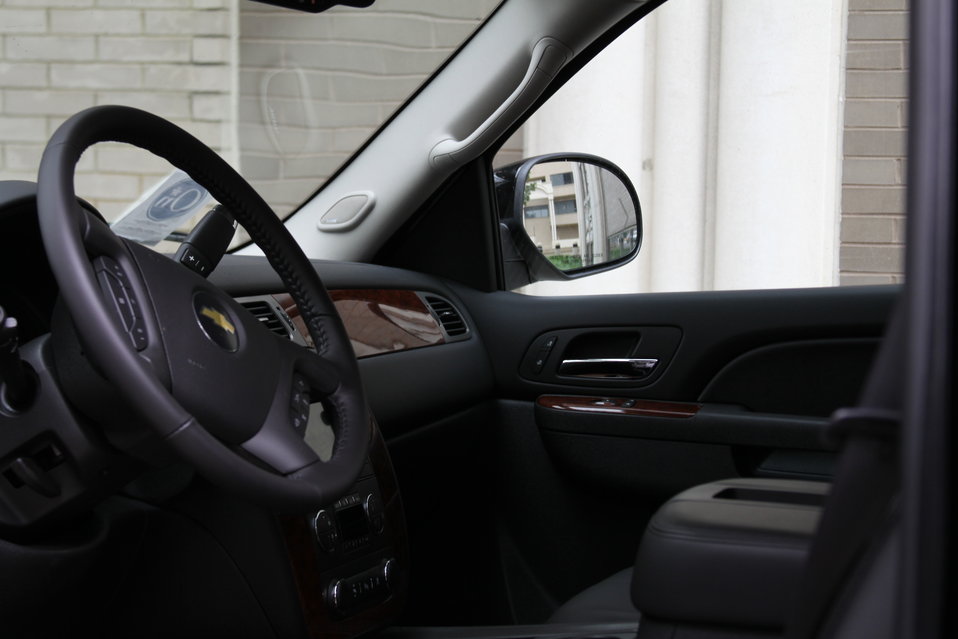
Tahoes 017